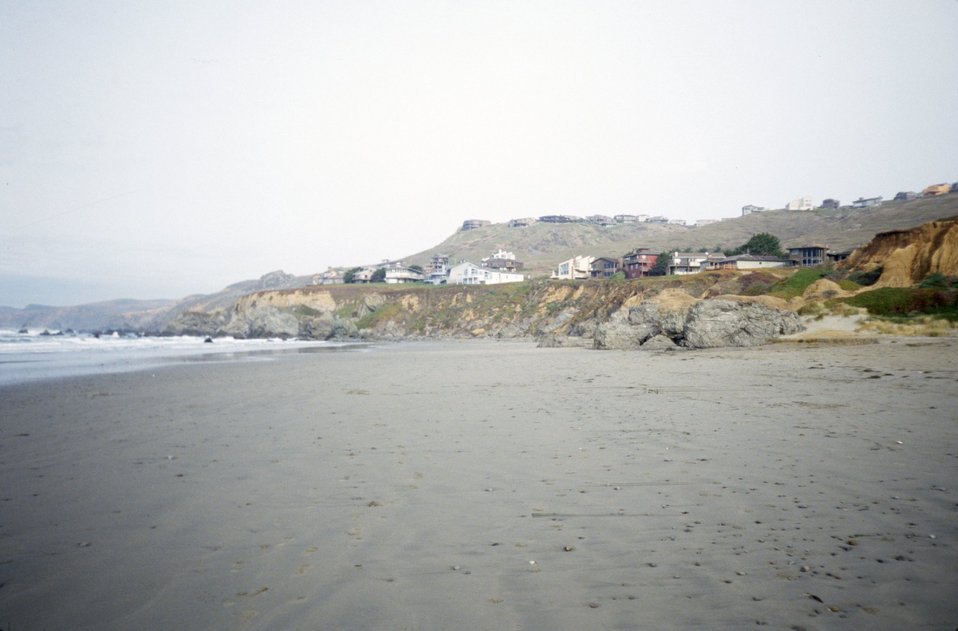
Dillon Beach